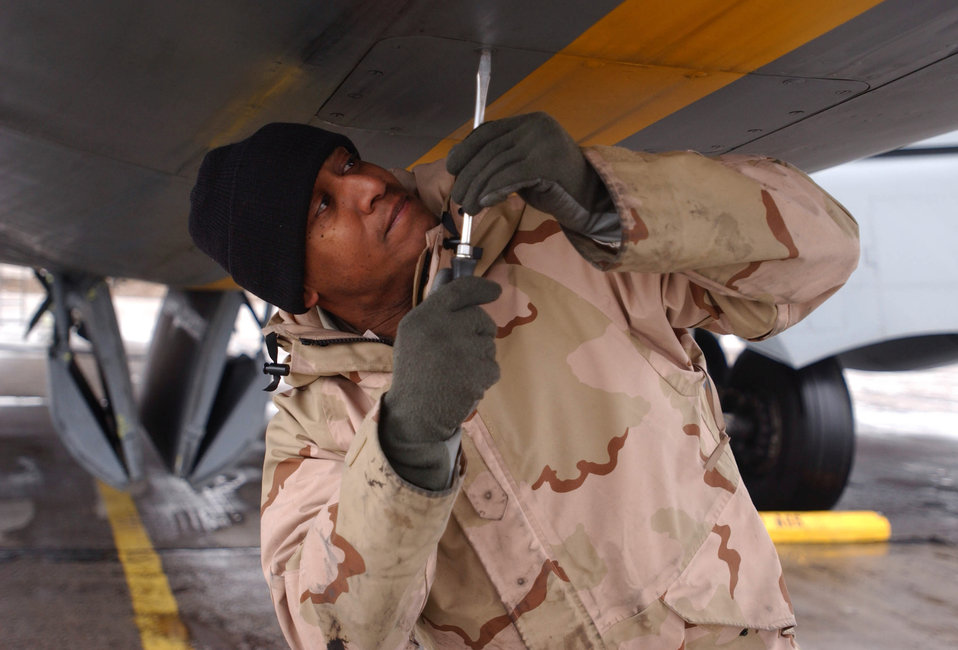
Tweaking tankers

OPERATION ENDURING FREEDOM -- Tech. Sgt. Michael Mickens works on a KC-135 Stratotanker after an air refueling mission over Afghanistan on Jan 20. Mickens is assigned to the 376th Expeditionary Aircraft Maintenance Squadron at Ganci Air Base, Kyrgyzstan, supporting Operation Enduring Freedom. The base is home to forces from seven coalition countries who conduct airlift, air-refueling and air-combat missions in Afghanistan.